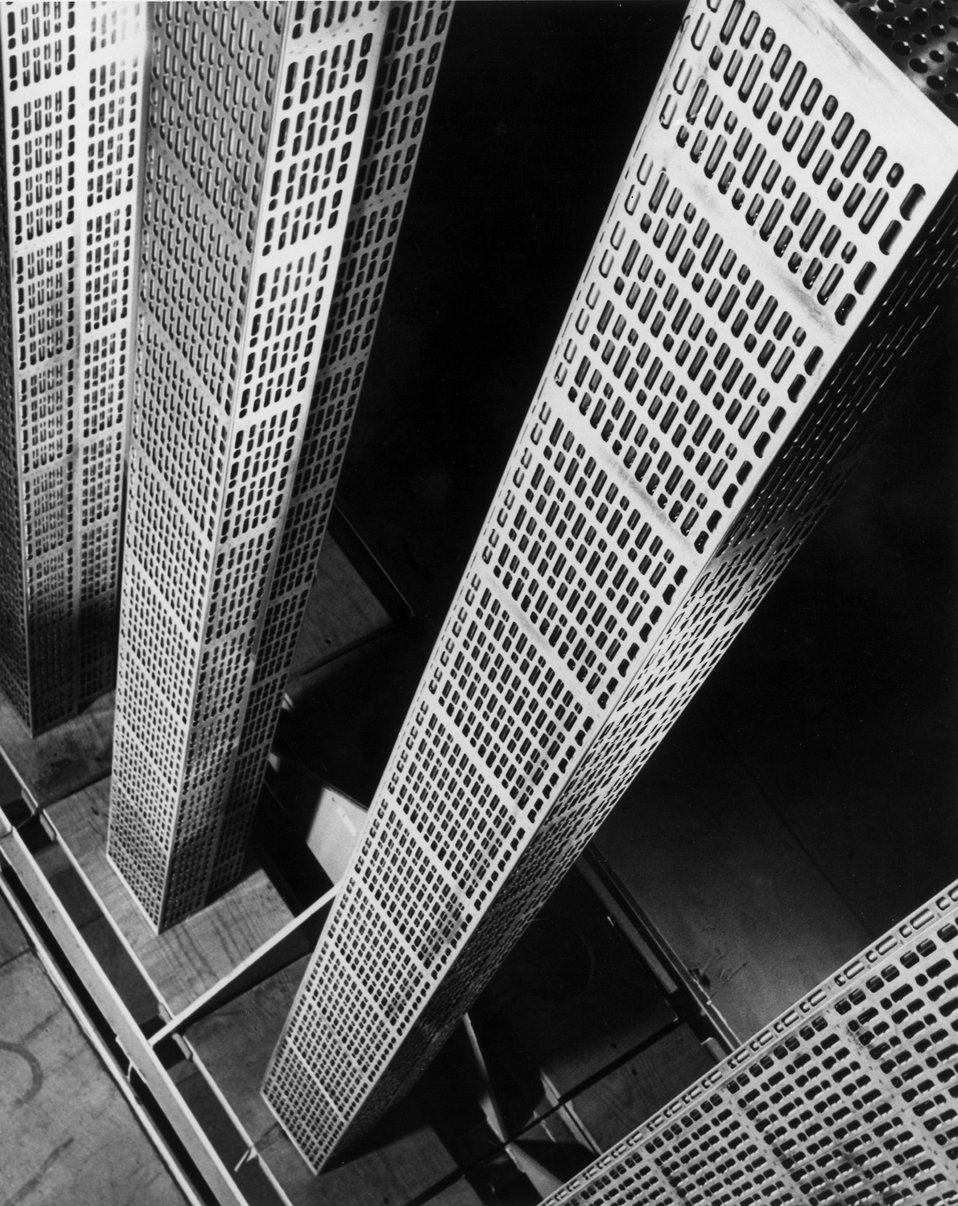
Reactor fuel elements ready for shipment. c. 1964